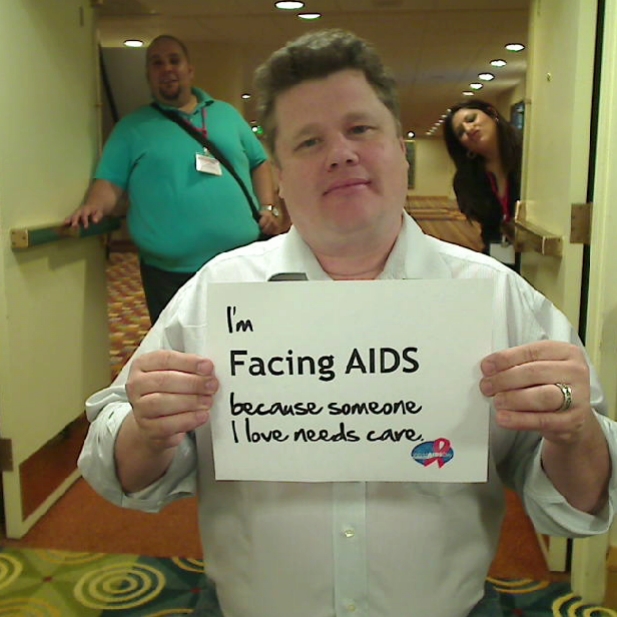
I'm Facing AIDS because someone I love needs care.